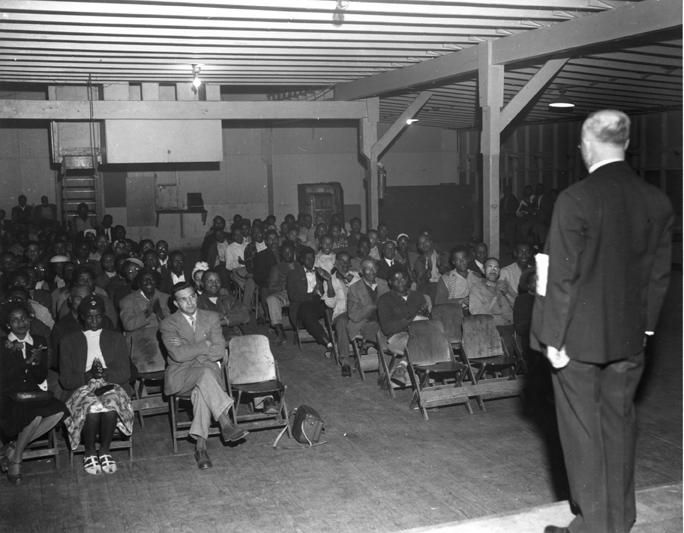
Meeting at Oak Ridge